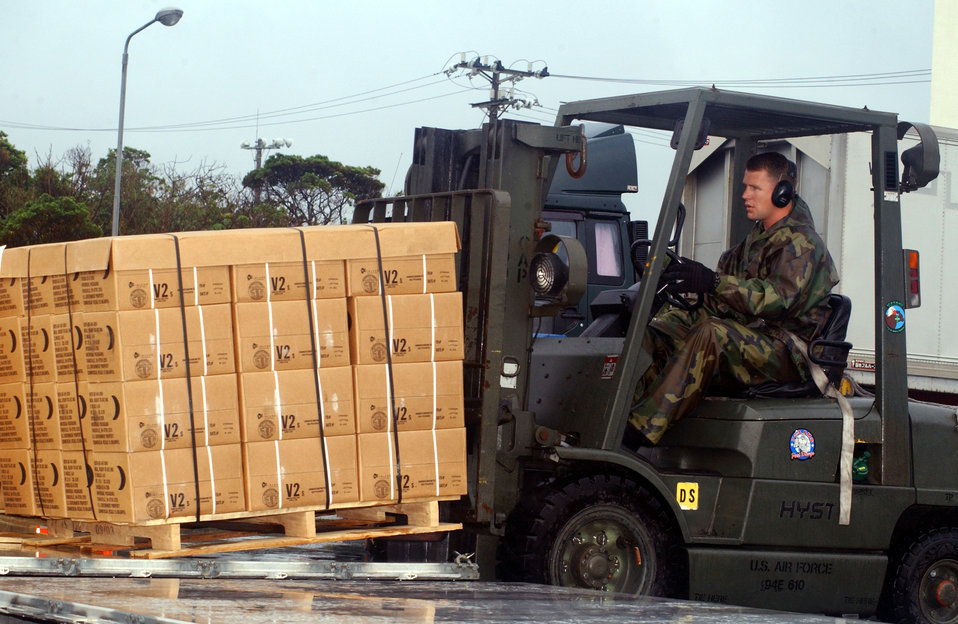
Airmen continue tsunami relief

KADENA AIR BASE, Japan -- Tech. Sgt. Justin Sturn loads cases of packaged meals onto an aircraft pallet bound for Southeast Asia. The meals are part of a disaster relief package destined for the area struck by a 9.0 magnitude earthquake Dec. 26 off the coast of Indonesia. The quake caused tsunami waves that killed at least 70,000 people in 12 countries. More than 3,000 cases of meals and four aircraft pallets of fresh water were processed through Kadena's cargo area Dec. 28. Airmen from the 18th Wing here are providing supplies to help with the humanitarian effort. Three KC-135 Stratotankers from here also are slated to support relief efforts in Sri Lanka. Sergeant Sturn is assigned to the 733rd Air Mobility Squadron.